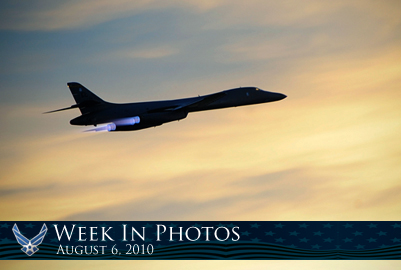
Air Force Week in Photos for Aug. 6, 2010, highlights photos from around the Air Force. In this photo by Airman 1st Class Corey Hook, a B-1B Lancer begins a training mission, Aug. 3, 2010, at Ellsworth Air Force Base, S.D.